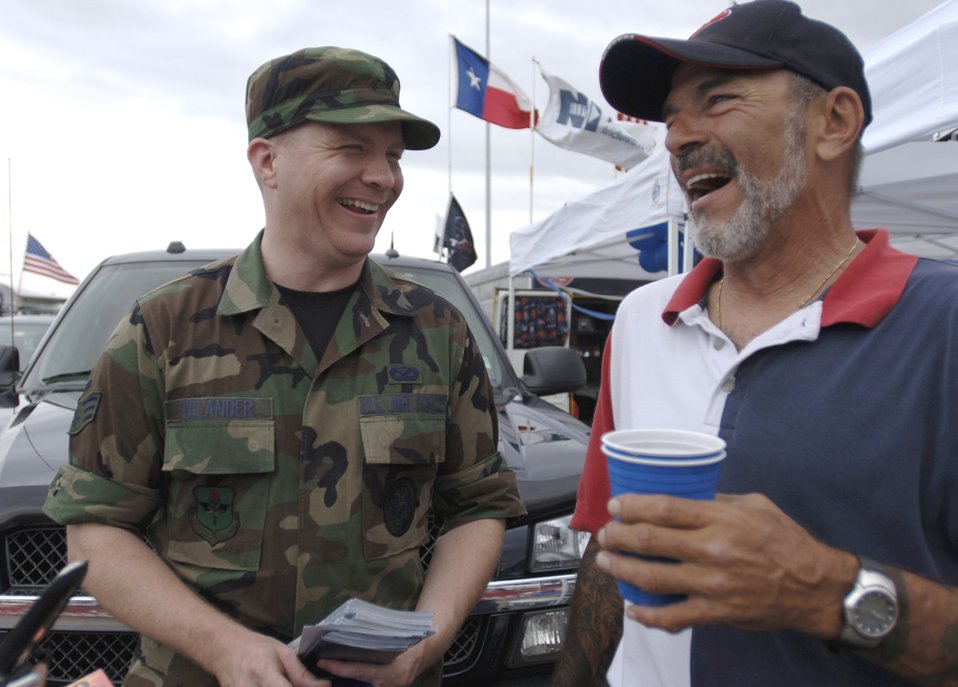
The Texans honored military servicemembers in their Salute to the Military day

Senior Airman Dylan Bolander and Joe Deer share a couple of laughs about Joe's 60th birthday while enjoying a tailgate party in the parking lot of Reliant Stadium in Houston Sept. 24. The game between the Houston Texans and Washington Redskins was designated as the Houston Texan's Salute to the Military day by team officials. Airman Bolander is a recruiter from Houston.